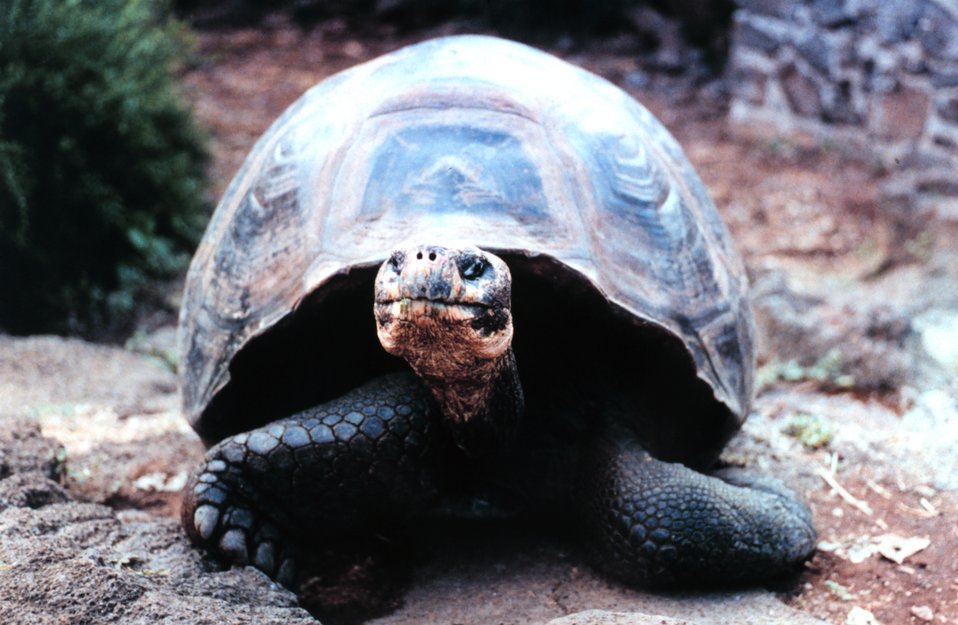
Tortoise at the Charles Darwin Scientific Station